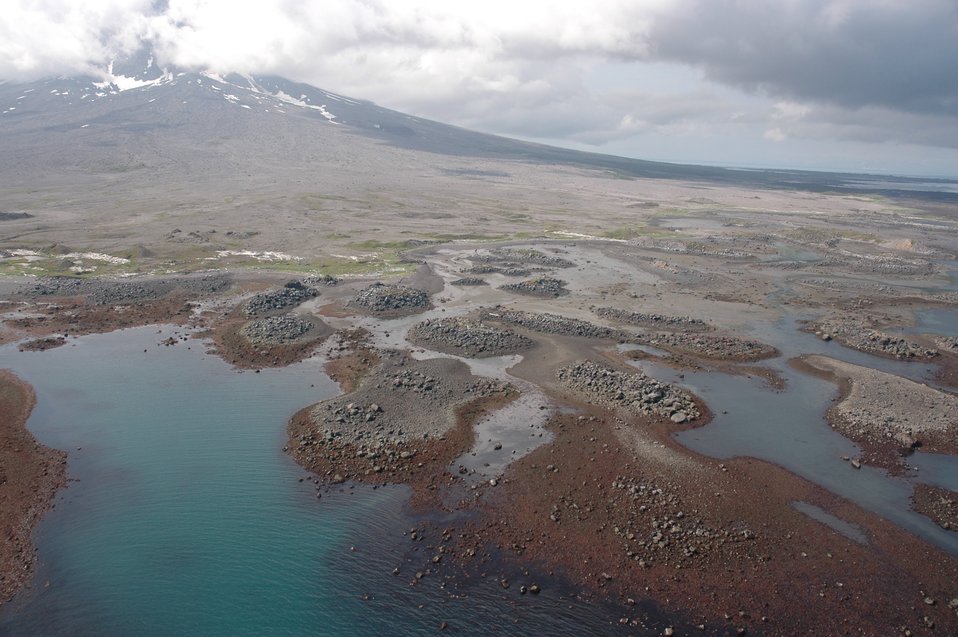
Aerial photograph. Islets of volcanic boulders at low tide on Augustine Volcano. Tidal channels and brownish red algae covered rocks.